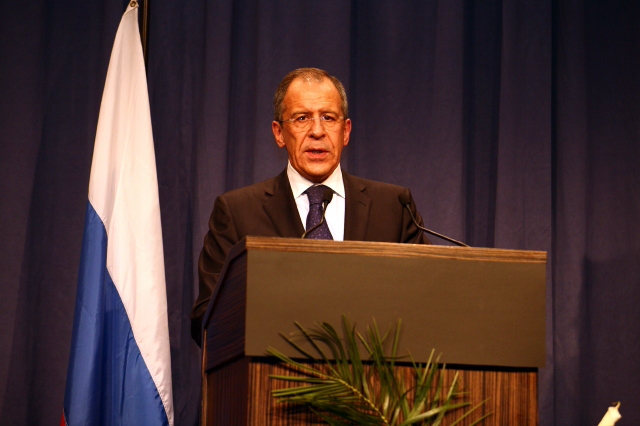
Press Conference With Russian Foreign Minister

Press conference after dinner meeting between U.S. Secretary of State Hillary Rodham Clinton and Russian Foreign Minister Sergey Lavrov in Geneva, Switzerland March 6, 2009.